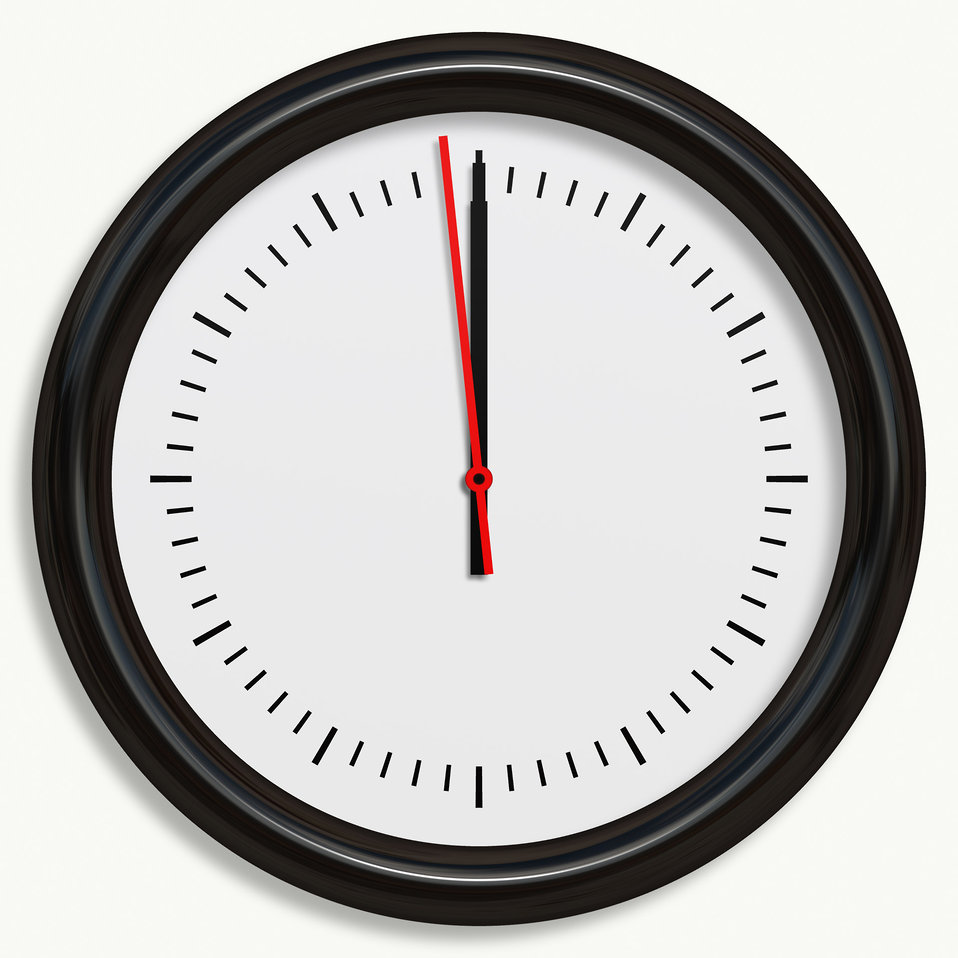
Black clock on white background wall.